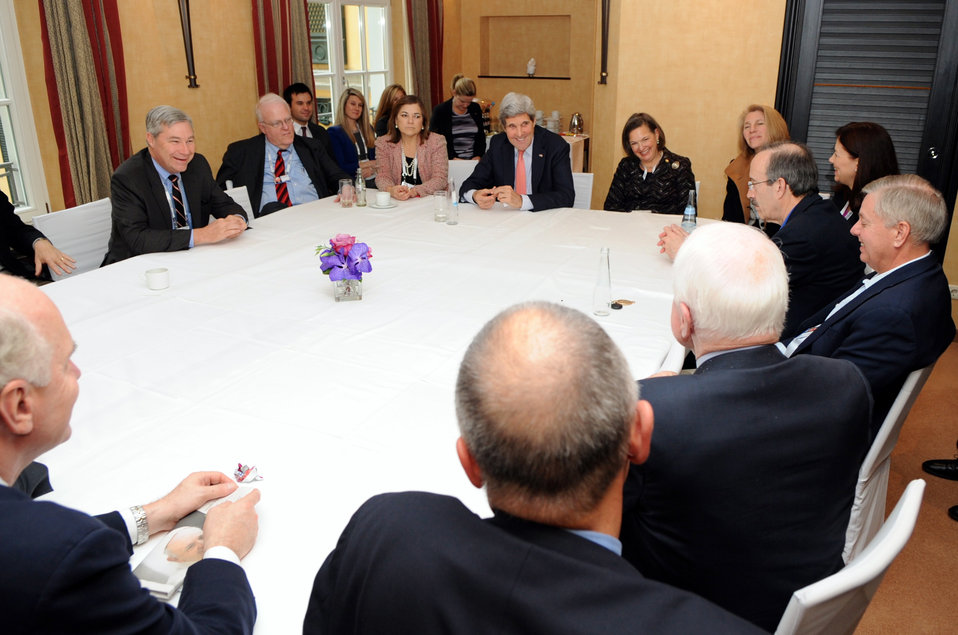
Secretary Kerry Shares a Laugh After Briefing Congressional Delegation at Munich Security Conference

U.S. Secretary of State John Kerry shares a laugh with U.S. Senators John McCain and other former colleagues after briefing a congressional delegation that attended the Munich Security Conference in Munich, Germany, on February 2, 2014.